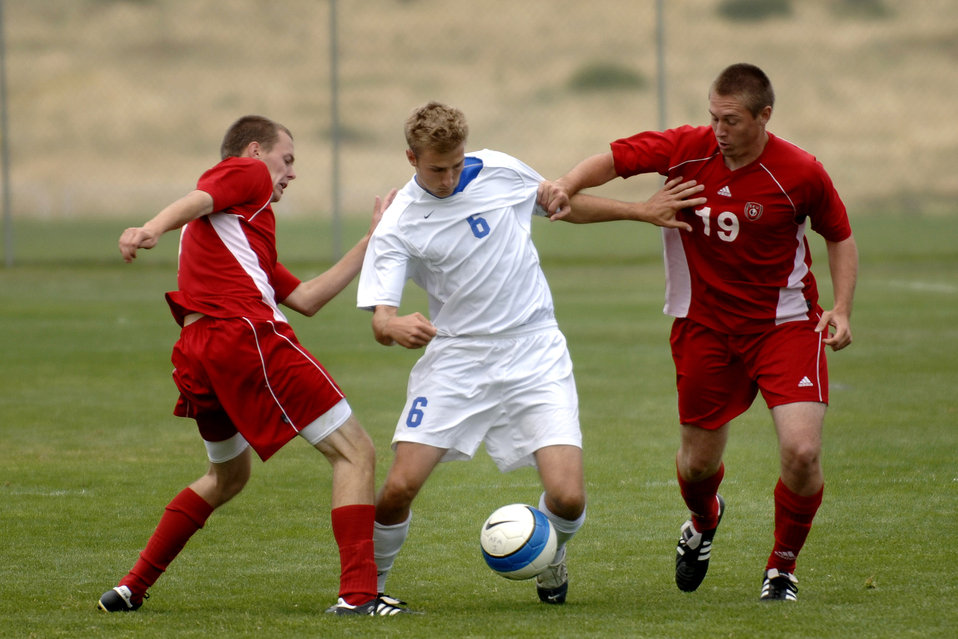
Falcons shut out St. Francis in soccer action

Senior Ian Hauck dribbles the ball through two defenders as Air Force posts its second consecutive shutout with a 1-0 victory over St. Francis University in men's soccer action Sept. 9 at the U.S. Air Force Academy Cadet Soccer Stadium in Colorado Springs, Colo. With the victory, Air Force improved to 2-2 this season, while St. Francis fell to 1-3.